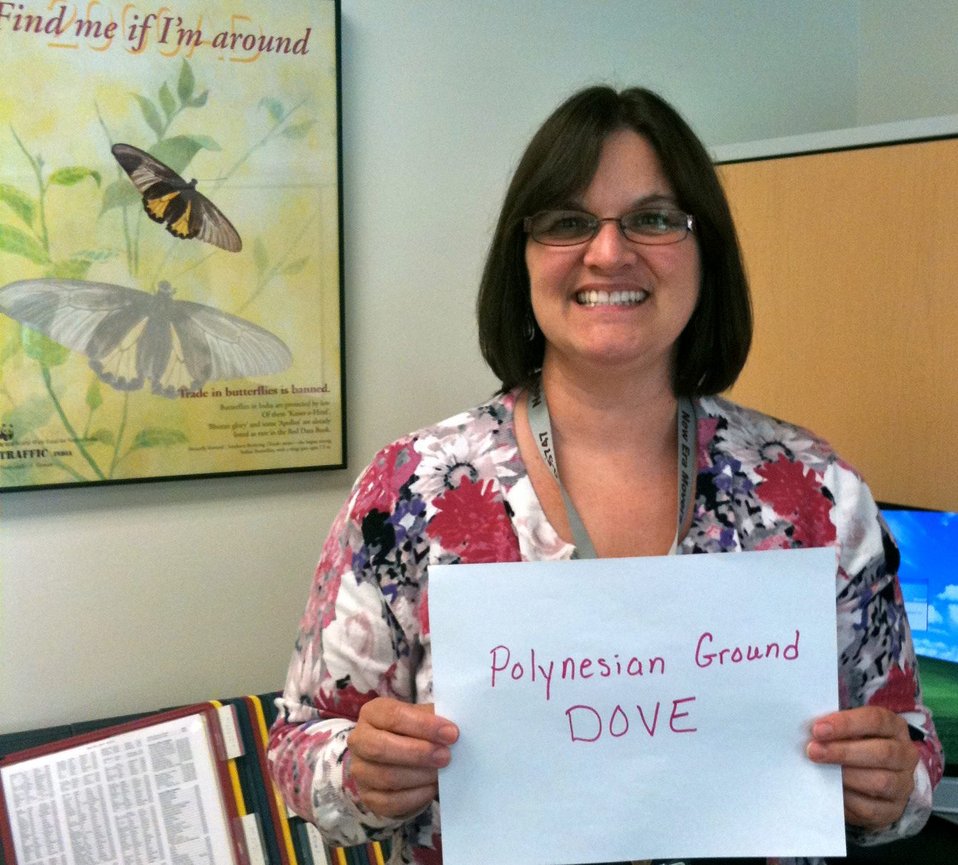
Carol Greeley, 'Polynesian Ground Dove,'

International Affairs participates in FFI's In Our Hands campaign